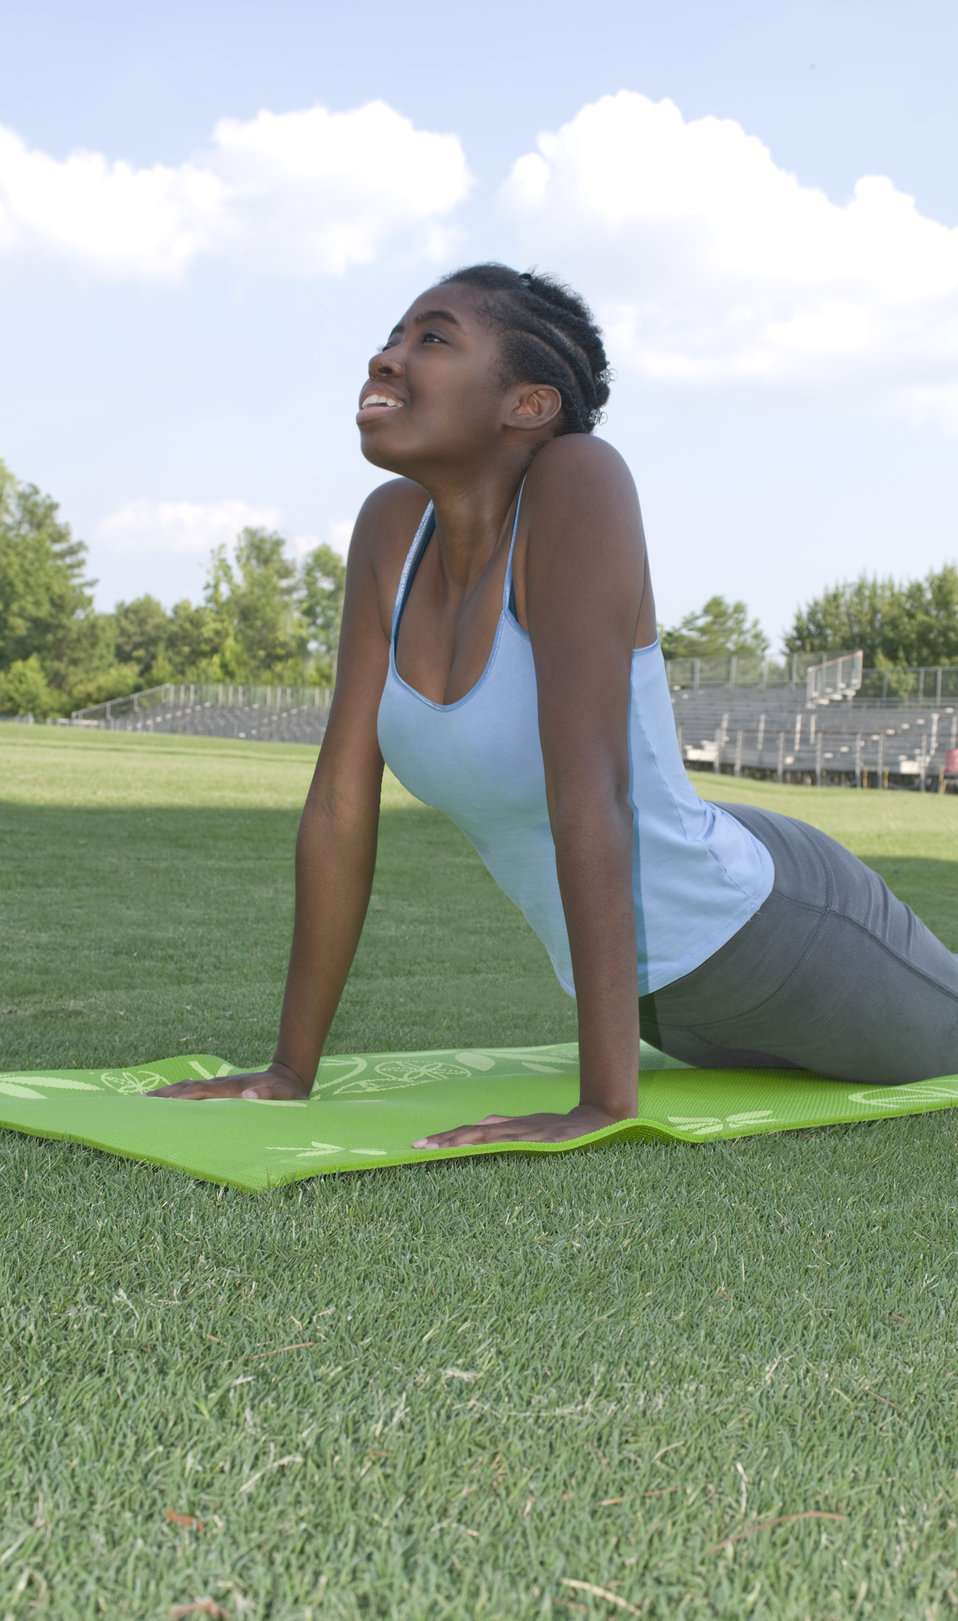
Pictured here at a Georgia running track, this young woman was getting in some exercise time on the beautiful sunny day. At this moment, she was warming up by assuming some Yoga poses. Here she was shown in the Cobra pose, stretching her abdominal muscles, while flexing the spinal and triceps muscles, resulting in a modified 'push-up' position, with the knees and hips kept on the green mat. Hopefully, she'd applied sunscreen to her sun-exposed skin prior to arriving at the track, and that she'd packed some fresh drinking in order to rehydrate herself during her exercise routine.